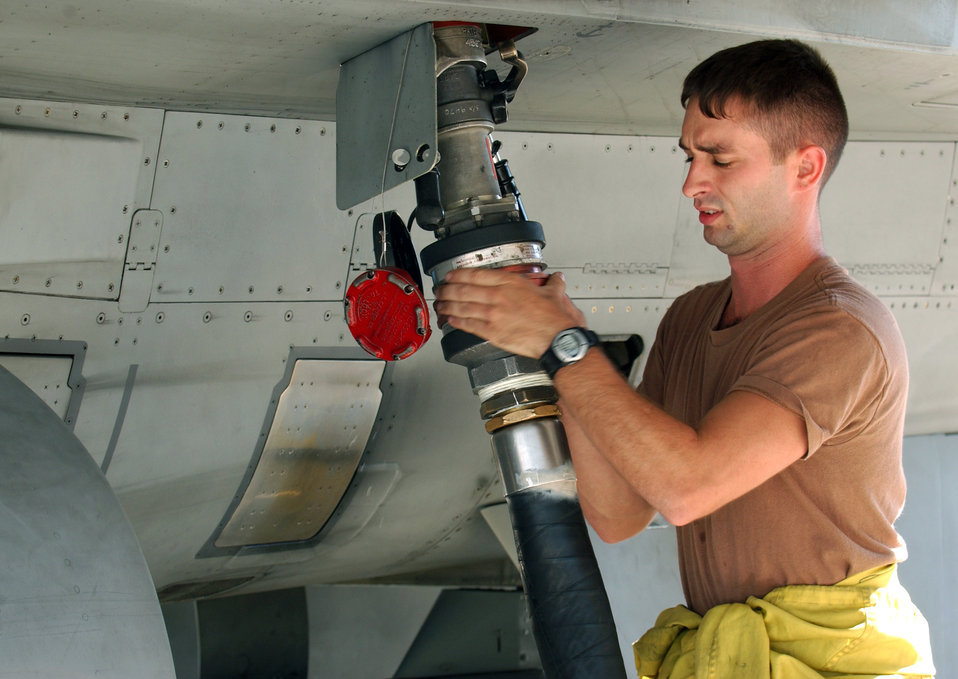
Golden Drum

AVIANO AIR BASE, Italy -- Staff Sgt. Damon Lee refuels an F-16 Fighting Falcon while competing for the Golden Drum award here Sept. 27. Sergeant Lee is a crew chief assigned to the 31st Aircraft Maintenance Squadron.